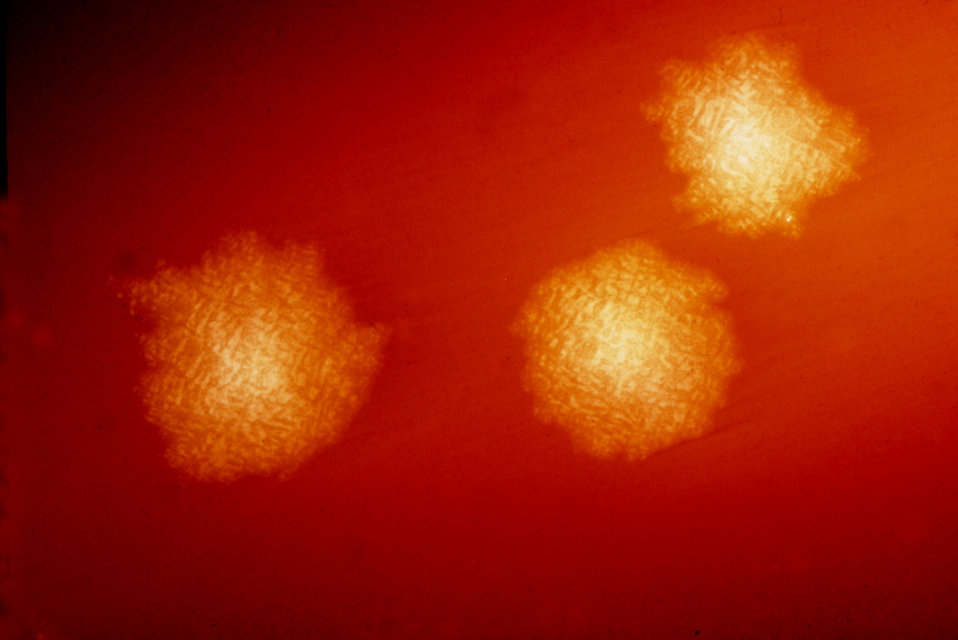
This photograph depicts Clostridium difficile colonies after 48hrs growth on a blood agar plate; Magnified 4.8X.